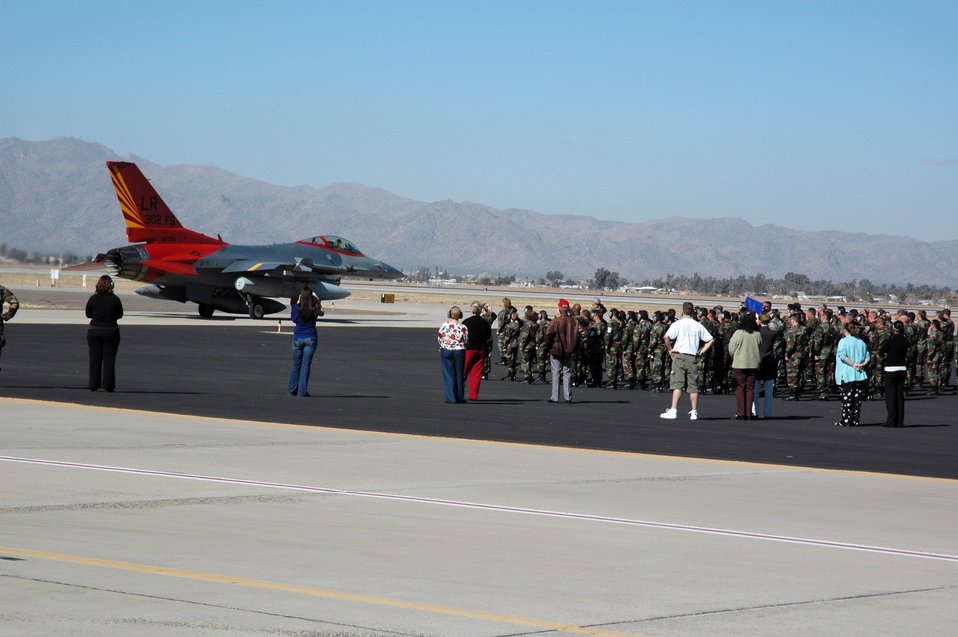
Reserve wing closes chapter in history

Members of the Air Force Reserve Command's 944th Fighter Wing at Luke Air Force Base, Ariz., watch as the 302nd Fighter Squadron's flagship passes for its final flight. The flagship, painted in original Tuskegee Airmen colors, will go on to become an aggressor at Nellis Air Force Base, Nev. The 944th FW is home to two original Tuskegee Airmen squadrons, the 301st and 302nd Fighter Squadrons. The 944th FW's 17 F-16 Fighting Falcons were reassigned to other units as part of Base Realignment and Closure Commission actions.